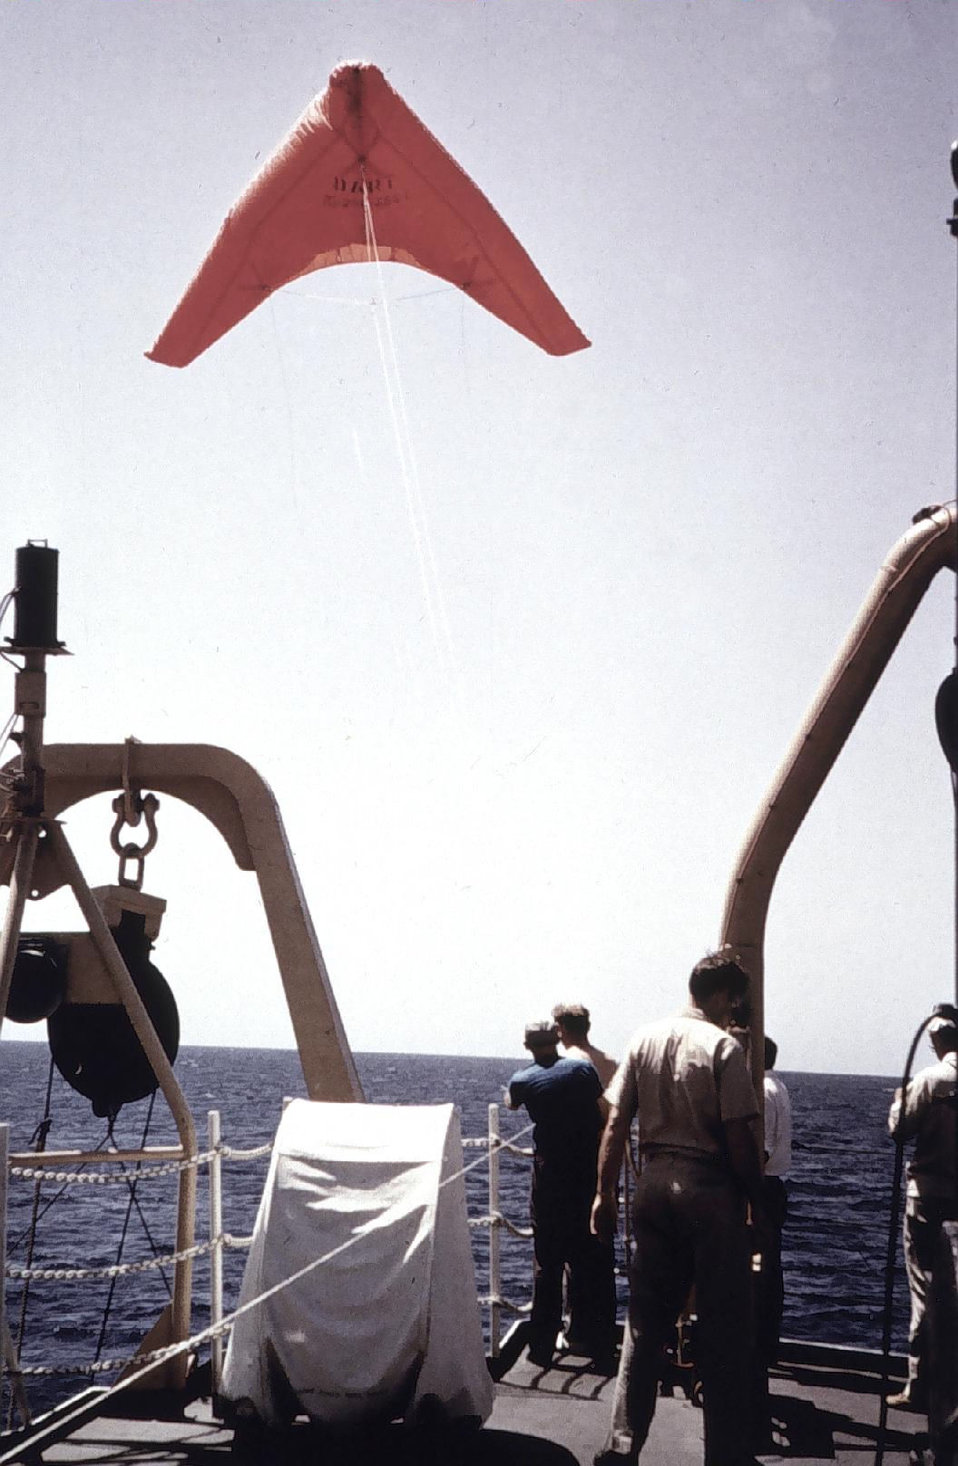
Dart balloon used for meteorological studies. OCEANOGRAPHER around the world cruise